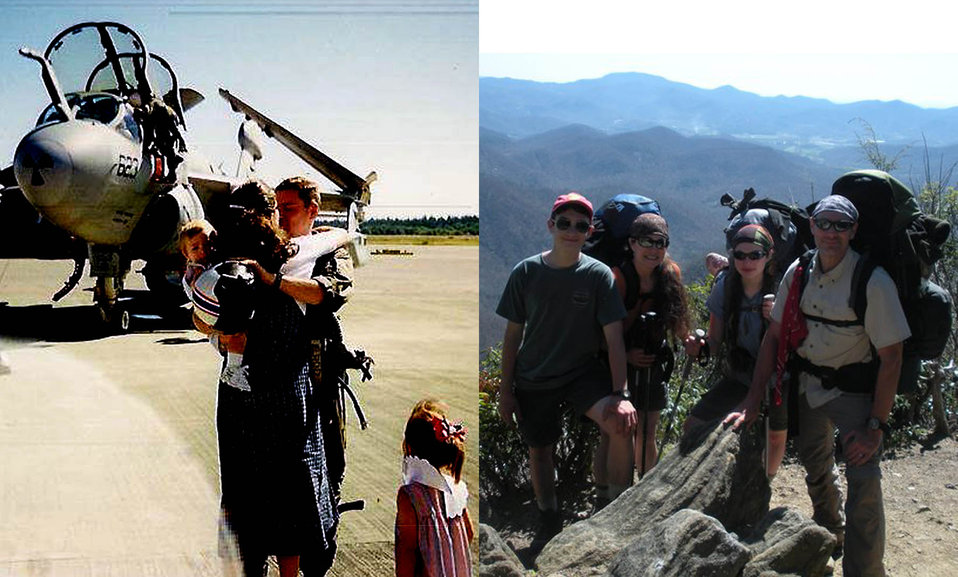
Gerald Elrod

Lee “Elwood” Elrod (Left) Naval Air Station Whidbey Island WA, EA 6b Prowler. (Right) Elrod family hiking the Appalachian Trail in North Carolia. Elwood served in the U.S. Navy from December 1991 to December 2011 and retired at the rank of Commander. Commissioned through the Navy ROTC Program at the Georgia Institute of Technology, Lee was accepted to Naval Flight Officer Training in Pensacola, FL. and received his Naval Flight Officer Wings in 1993. After attending Electronic Warfare School and additional flight training in the EA-6B Prowler, Lee was assigned to VAQ-140 and completed two deployments aboard the USS George Washington flying combat missions in support of Operations Joint Endeavor in Bosnia and Southern Watch in southern Iraq. After his initial tour, Lee completed tours as a flight instructor in Pensacola, FL. and another EA-6B Prowler tour in support of Operations Northern and Southern Watch flying out of air bases in Incirlik, Turkey, and Prince Sultan, Saudi Arabia. .
In 2002, Lee transitioned to the Full Time Reserves and served as the Reserve Program Director at the Naval Air Reserve in Atlanta, Commanding Officer of the Navy Operational Support Center in Greenville, South Carolina, and as the Executive Officer at the Navy Operational Support Center in Atlanta, supporting the mobilization readiness of Navy Reservists for the Global War on Terror. Lee also qualified as co-pilot in the UC-12B flying military airlift missions in the southeast U.S..
Following military retirement from January to June 2012, Lee worked as a Project Manager at the Georgia Tech Research Institute in the Electronic Systems Lab and was assigned to the Joint Precision Approach and Landing System software project. In July 2012, Lee joined the Fish and Wildlife Service as the Branch Chief for the Budget and Financial Management Branch in the Division of Budget, Planning and Financial Systems..
Lee has earned several awards during his military career to include the Meritorious Service Medal, three Air Medals, two Navy Commendation Medals, one Navy Achievement Medal, and various other campaign and unit awards. Lee is married to his wife Janet of 20 years and has two children; Scarlett who is 19 and James who is 17. They reside in Newnan, Georgia.